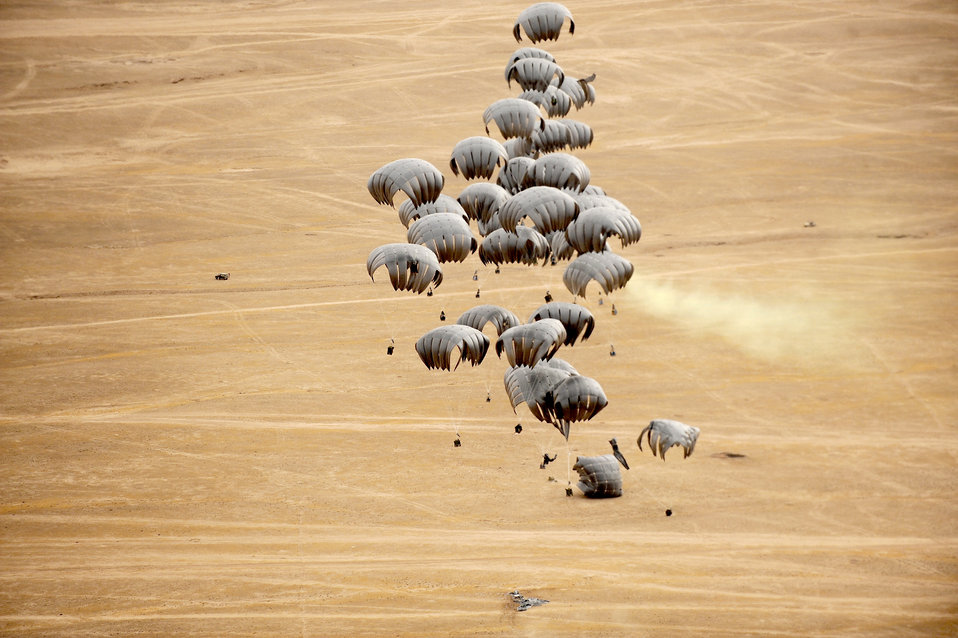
Airdrops break records in Afghanistan

Container Delivery System bundles parachute to the ground from a C-17 Globemaster III transport jet over a drop zone May 9, 2010, in Afghanistan.